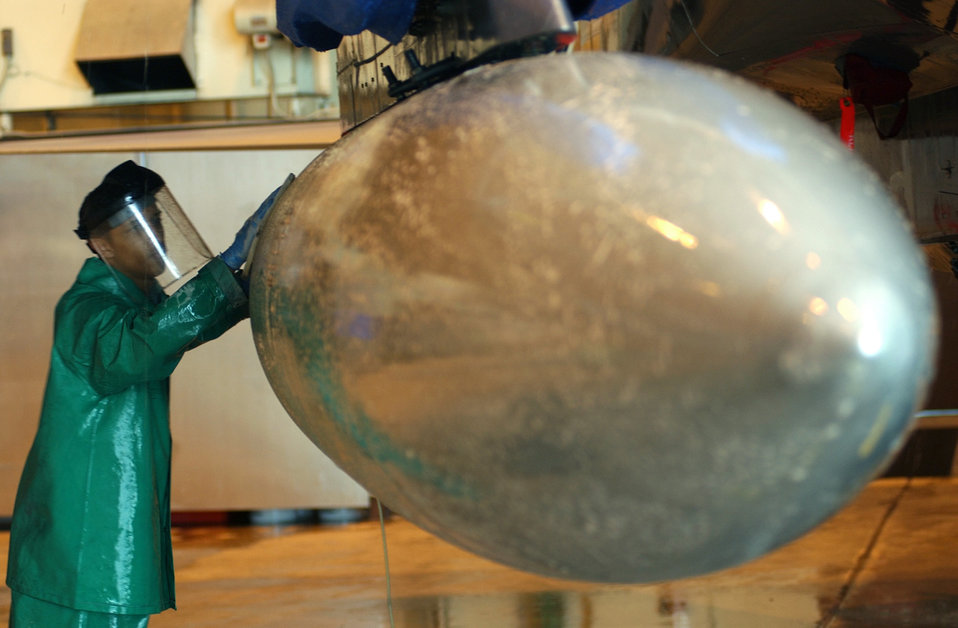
It's a wash

ELMENDORF AIR FORCE BASE, Alaska -- Airman 1st Class Errion Zanders washes an F-15 Eagle from the 19th Fighter Squadron here during Northern Edge '04. About 9,000 Soldiers, Sailors, Airmen, Marines and Coast Guardsmen are serving as part of a joint task force practicing tasks associated with joint operations.